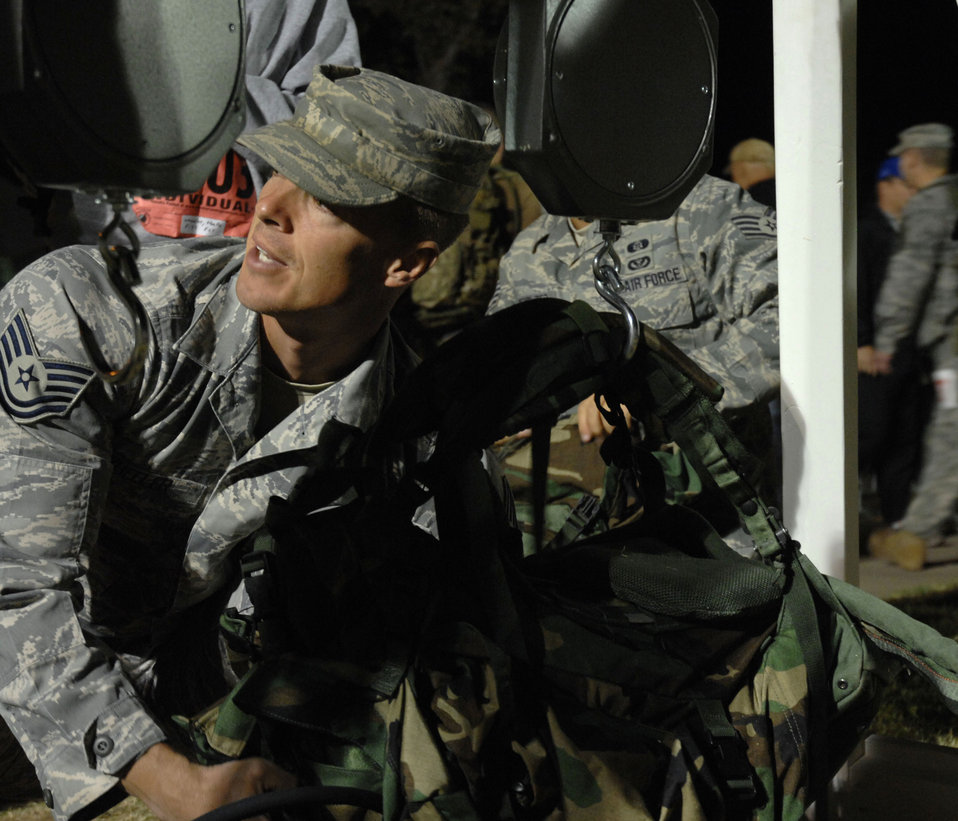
It's not heavy

Tech. Sgt. Daniel Wheeler weighs his rucksack before starting the 19th Bataan Memorial Death March at White Sands Missile Range, N.M. on March 30. More than 4,400 people participated in the annual 26.2 or 15-mile run/walk. Sergeant Wheeler is from Lackland Air Force Base, Texas.